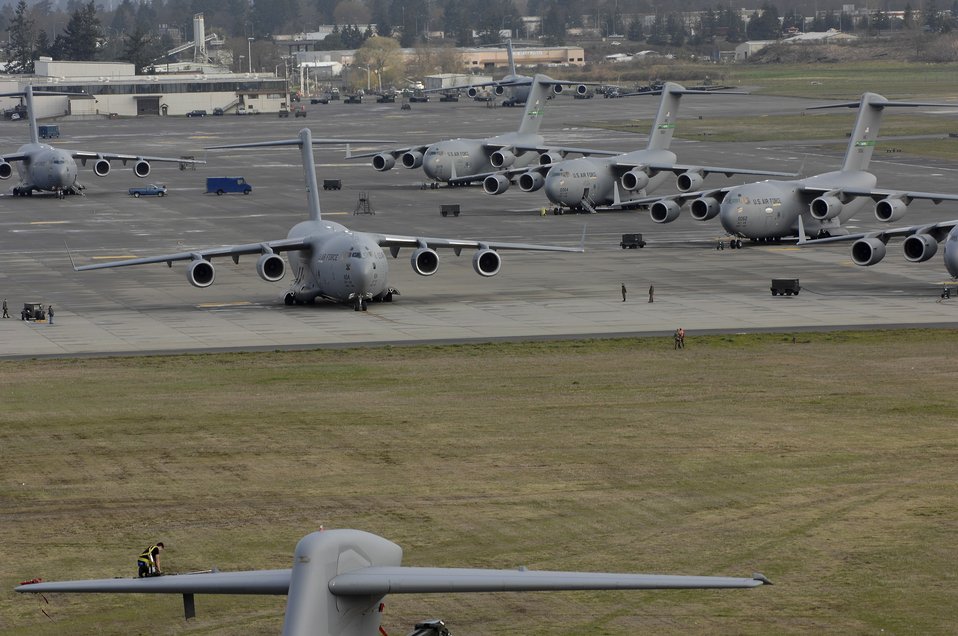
Maintainers keep C-17s flying

Airman 1st Class Bryan Walters kneels on the tail of a C-17 Globemaster III March 28 at McChord Air Force Base, Wash., and prepares to replace an integrated flight control module on the aircraft. Airman Walters is assigned to the 62nd Aircraft Maintenance Squadron.